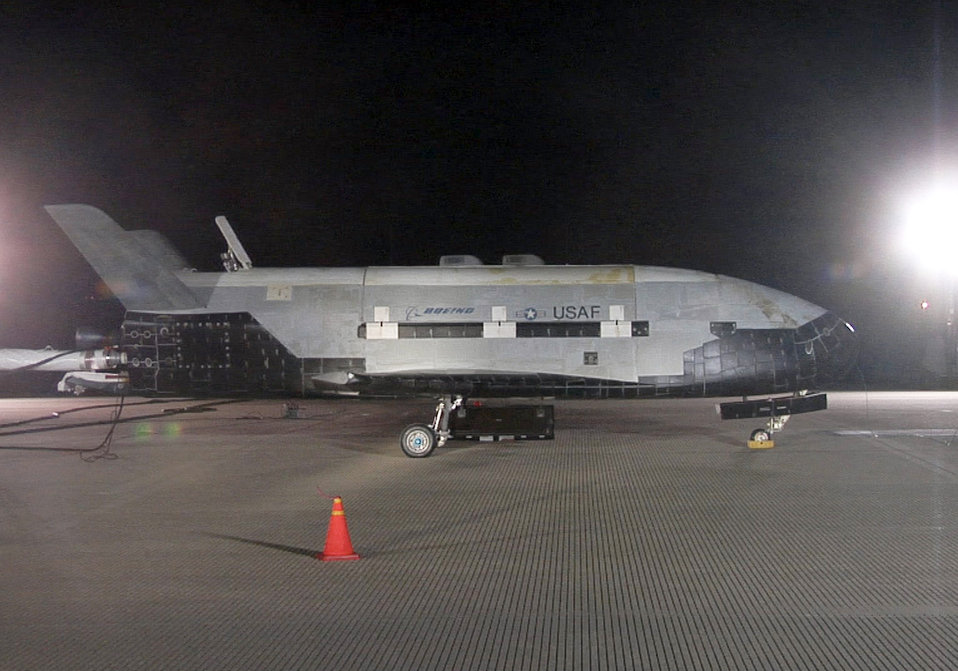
X-37B Orbital Test Vehicle 1

The X-37B Orbital Test Vehicle sits on the runway during post-landing operations Dec. 3, 2010, at Vandenberg Air Force Base, Calif. The X-37B conducted on-orbit experiments for more than 220 days during its maiden voyage. It fired its orbital maneuver engine in low-earth orbit to perform an autonomous reentry before landing.